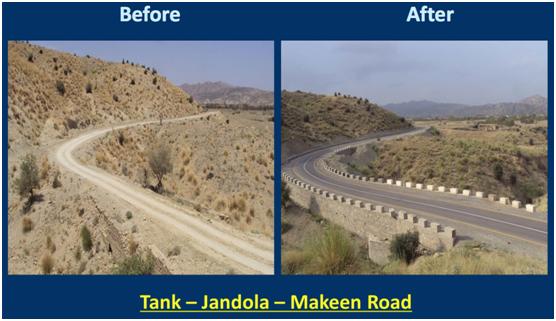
Tank- Jandola- Makeen road.

Before and After of Tank- Jandola- Makeen road.